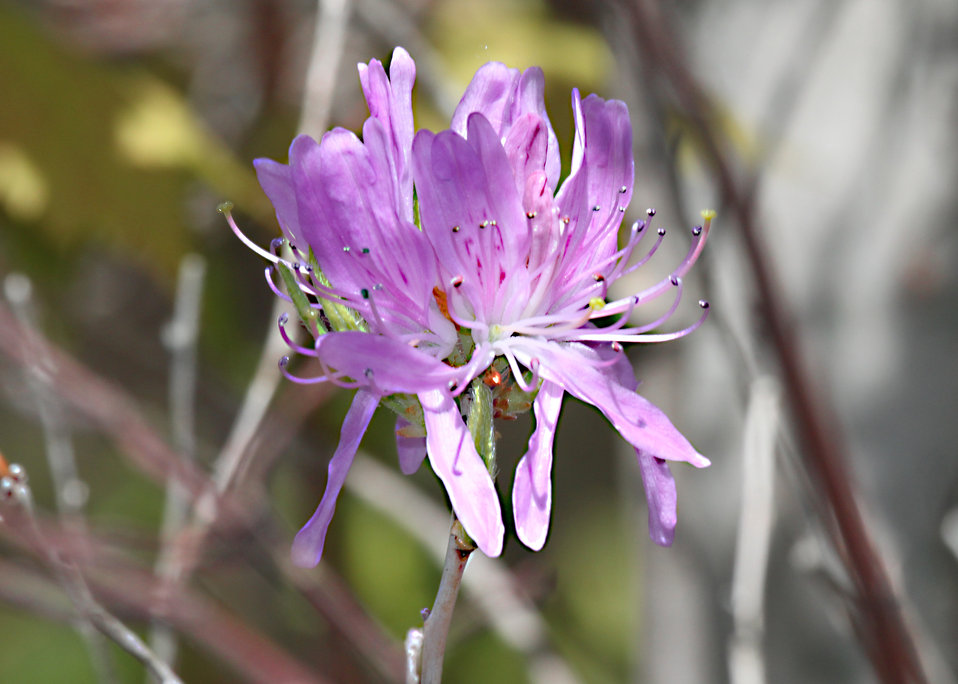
Rhodora in bloom

Rhodora-Missisquoi NWR
Photo Credit: Ken Sturm; USFWS